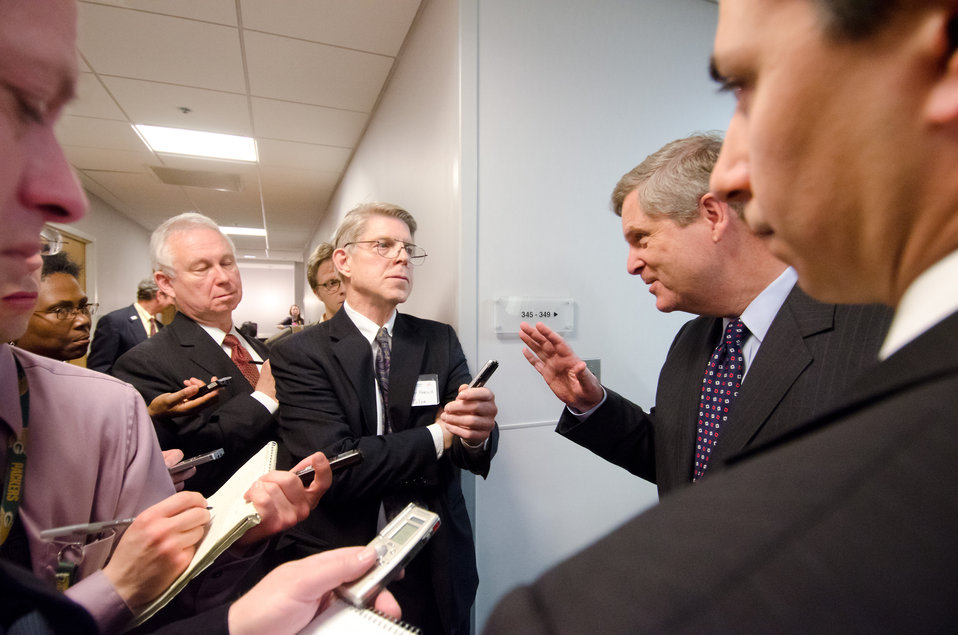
U.S. Department of Agriculture Secretary Tom Vilsack would not be talked into making contradictory statements about his planned method of announcing the effects of the budget, if it is not passed, during an impromptu press conference in a hallway after he spoke at the Organic Trade Association’s 2011 Policy Conference and Hill Visit Days on Wednesday, April 6, 2011 in Washington, DC. With the budget decision still to be made, reporters had many questions for Secretary Vilsack about how he would announce decisions, his response was that all will be informed at the same time.